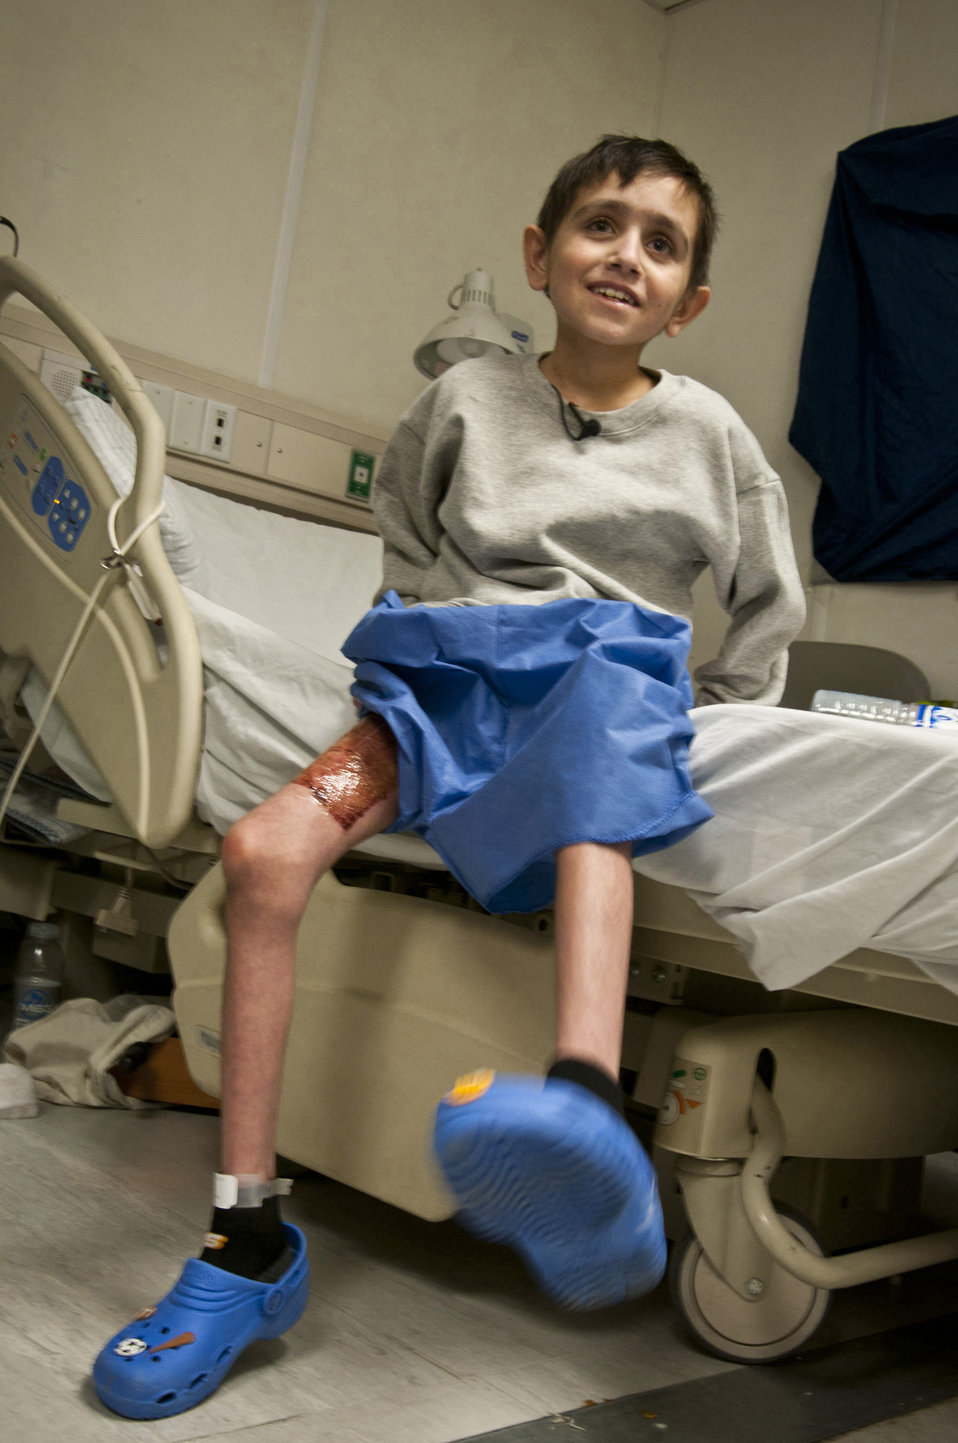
Craig Joint-Theater Hospital's longest resident inspires staff

Najibullah, 10, talks to hospital staff and reporters from his bedside Jan. 1, 2012, his 164th day at the Craig Joint-Theater Hospital in Afghanistan. He was severely injured in the stomach July 20, in Ghazni province.